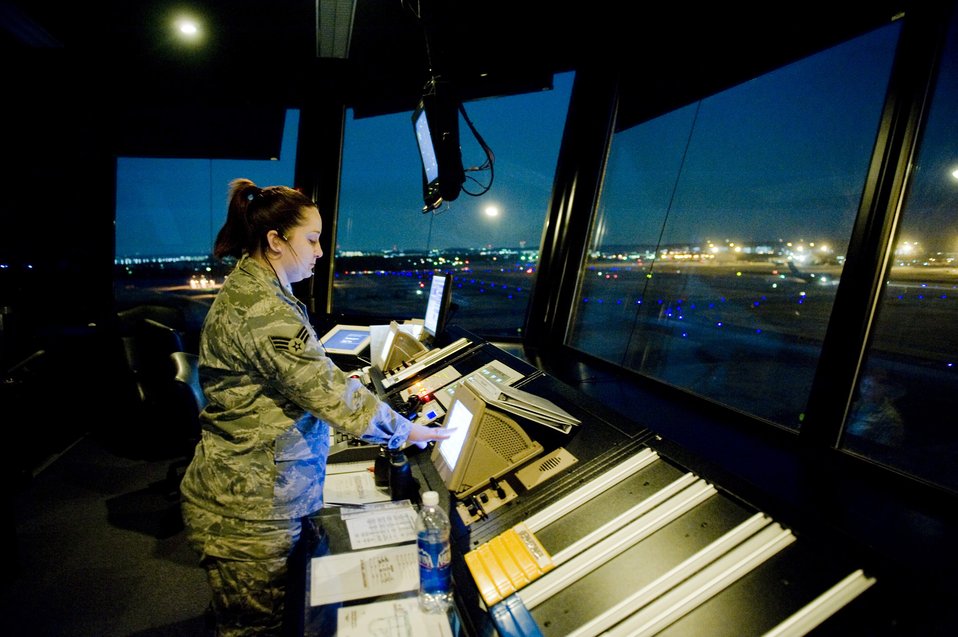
Directing traffic

Senior Airman Lyndsi Tullos communicates with maintenance operations center officials about flightline operations March 24, 2011, at Yokota Air Base, Japan. Tullos is an air traffic controller assigned to the 374th Operations Support Squadron.